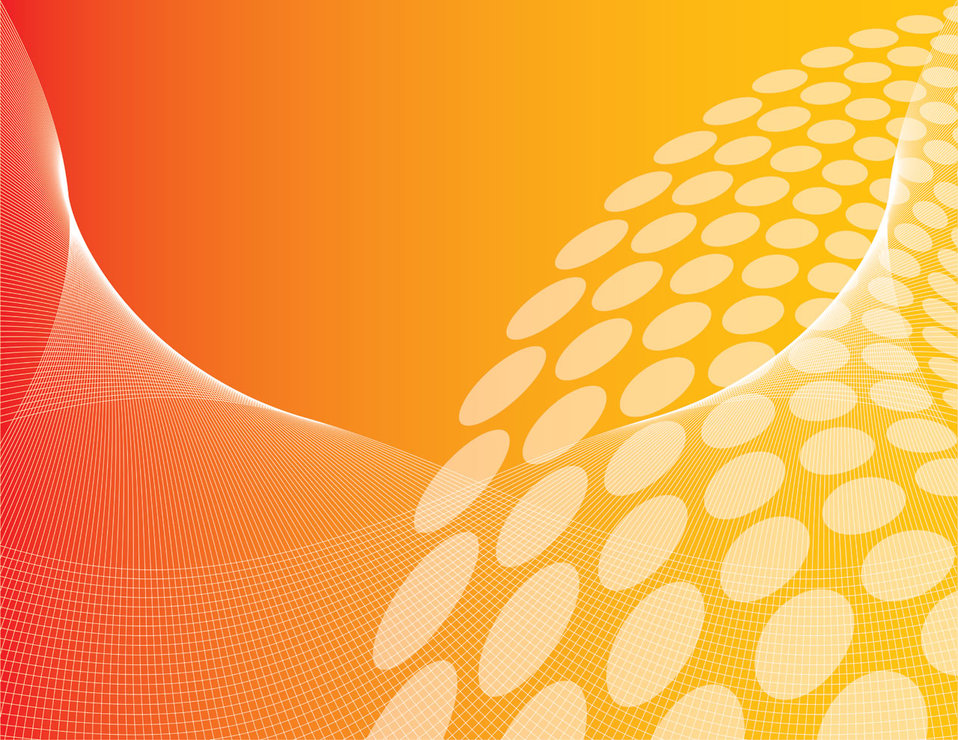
Abstract orange background. available in vector format on vectorportal.com.